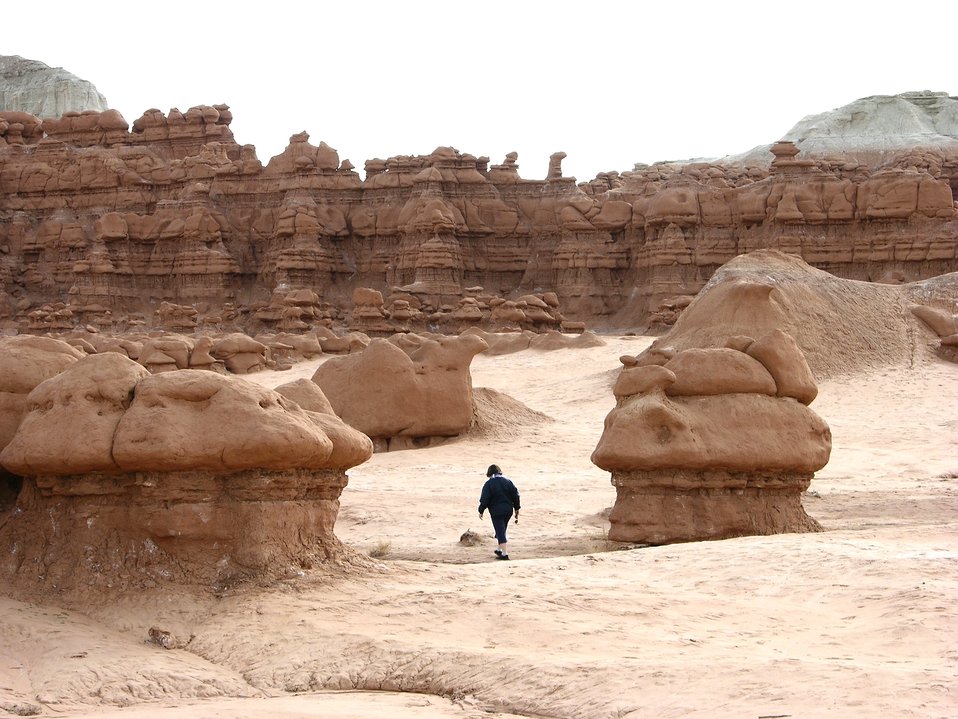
Goblin Valley State Park. The Goblins are much larger than they appear in images amer0040, 0041, and 0043. Wind and water eroded features.